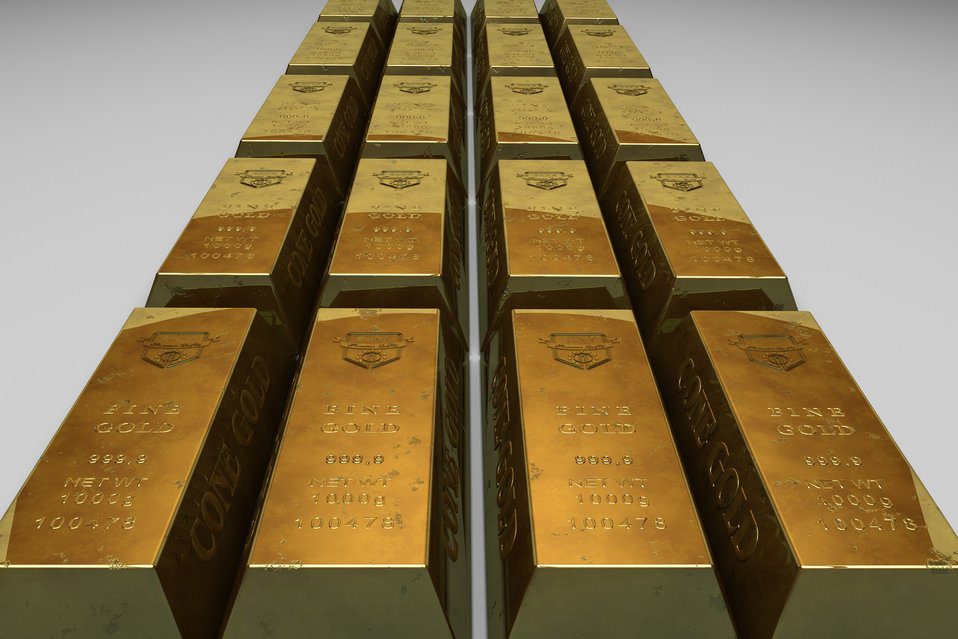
Gold bullion in high definition.